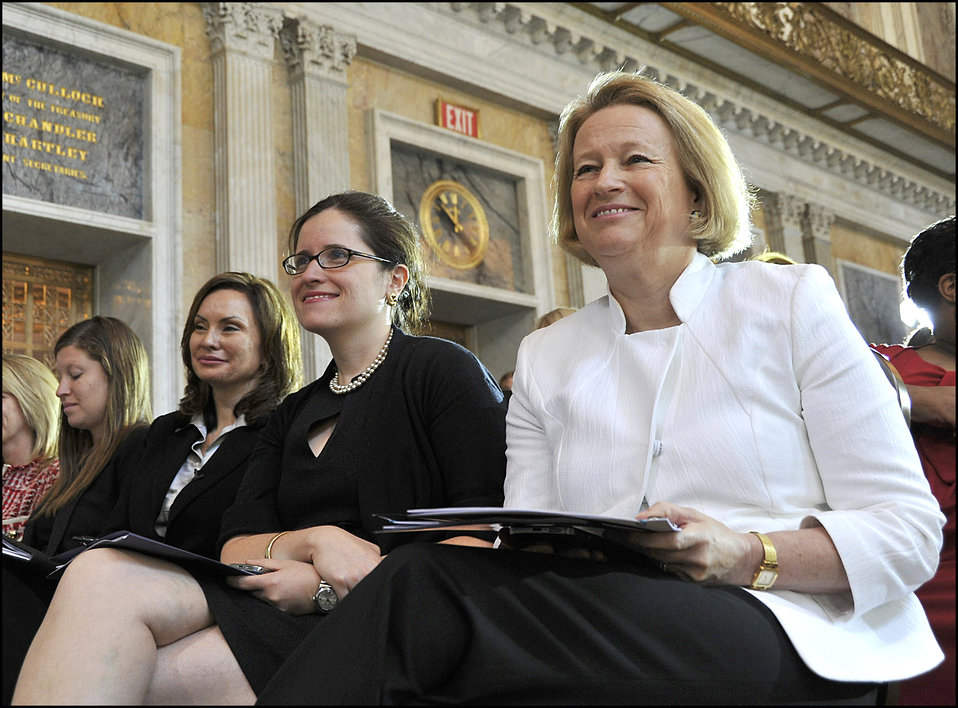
Women in Finance Investment Symposium

(L to R) Treasurer Rosie Rios, Chief of Staff at the Securities and Exchange Commission Didem A. Nisanci and Chairman of the SEC Mary Schapiro listen to panel three on 'Investing in the Economic Recovery.'